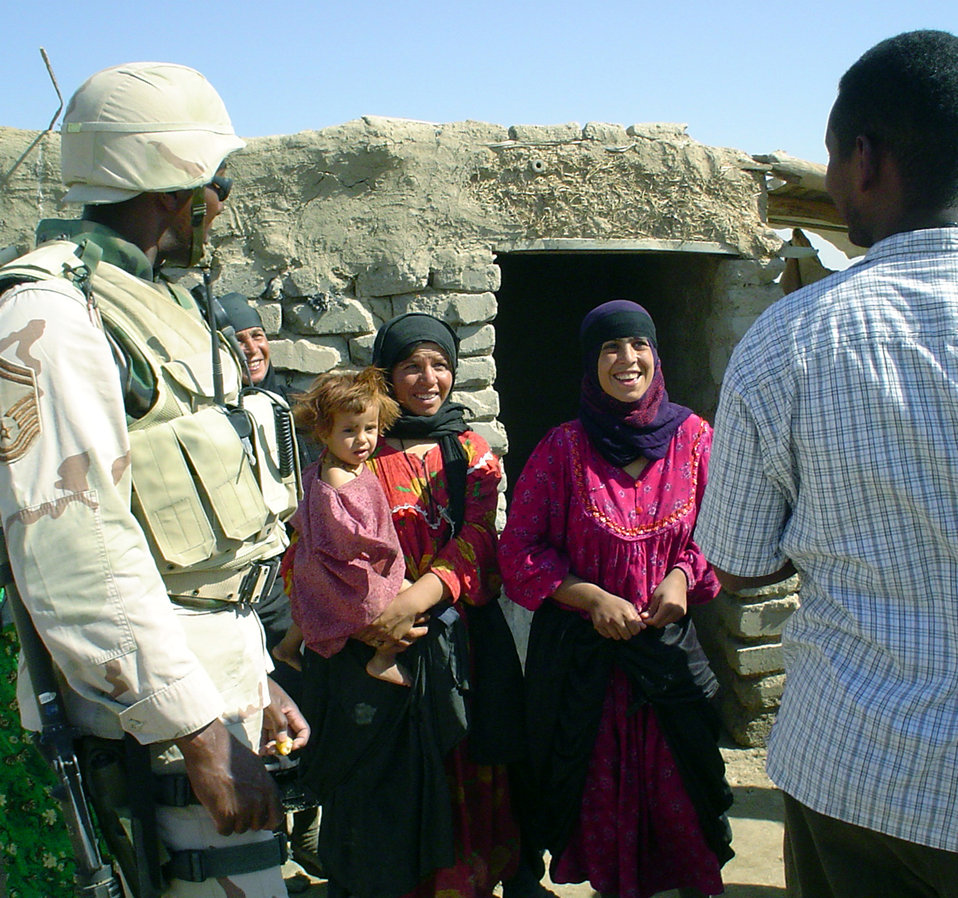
Airmen reach out to locals

TALLIL AIR BASE, Iraq -- Senior Master Sgt. Don Dixon (left) and interpreter Badreldin Osman talk to a local family on the perimeter of the base during an Operation Reach Out visit. Sergeant Dixon began the operation to establish a rapport with families living near the base. He is the 407th Expeditionary Security Forces Squadron's operations superintendent.